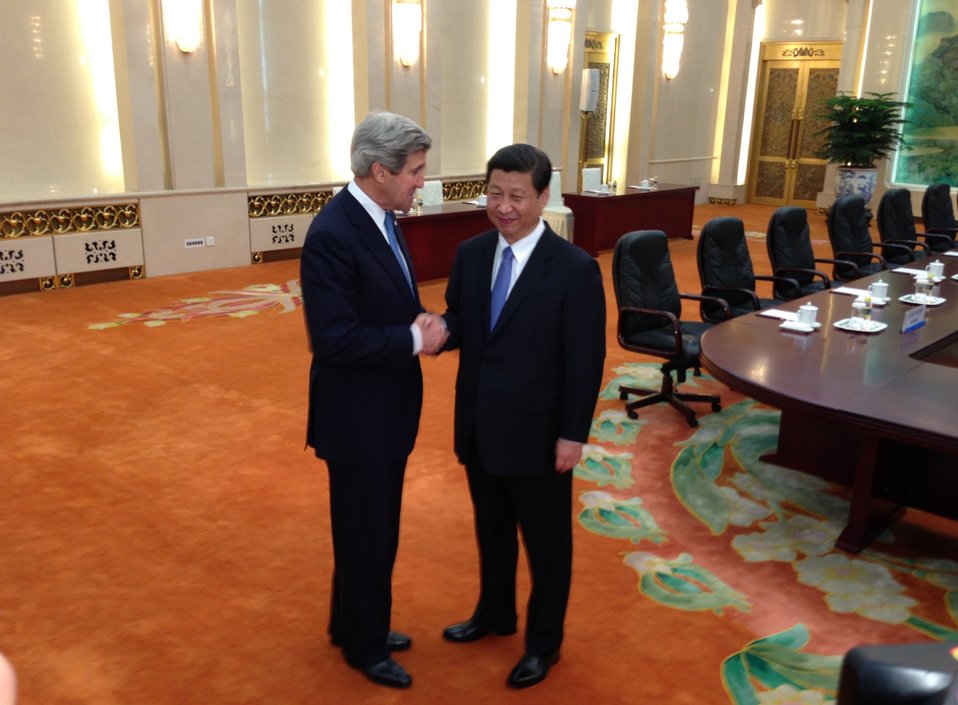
Secretary Kerry is Greeted by Chinese President Xi Jinping

U.S. Secretary of State John Kerry is greeted by Chinese President Xi Jinping upon entering the Fujian Room at the Great Hall of the People in Beijing, China, on April 13, 2013.